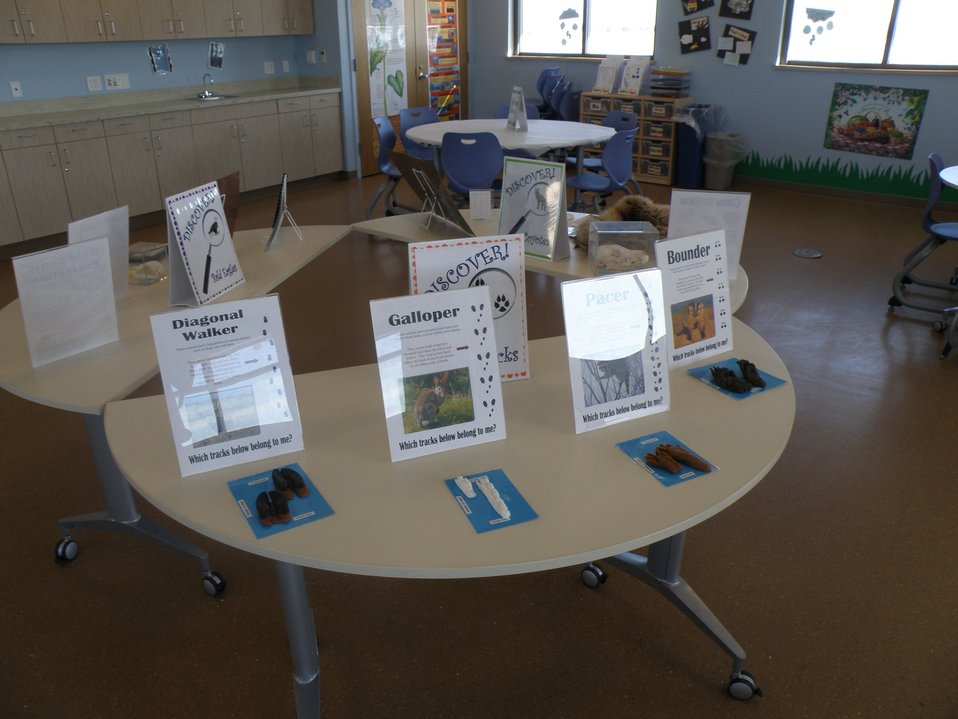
Discovery Room Animal Tracks